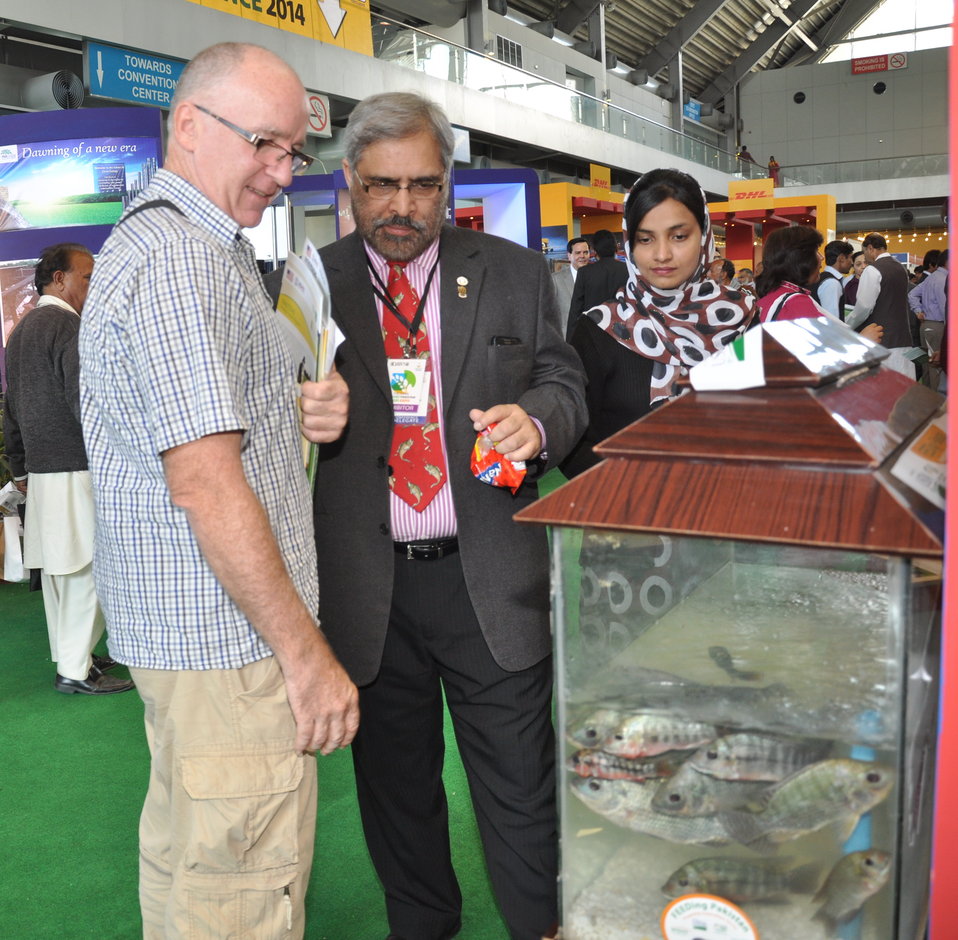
FEEDing Pakistan (Promoting Aquaculure Sector)

Demonstration of Floating Feed and Tilapia Culture was briefed to foreign delegates